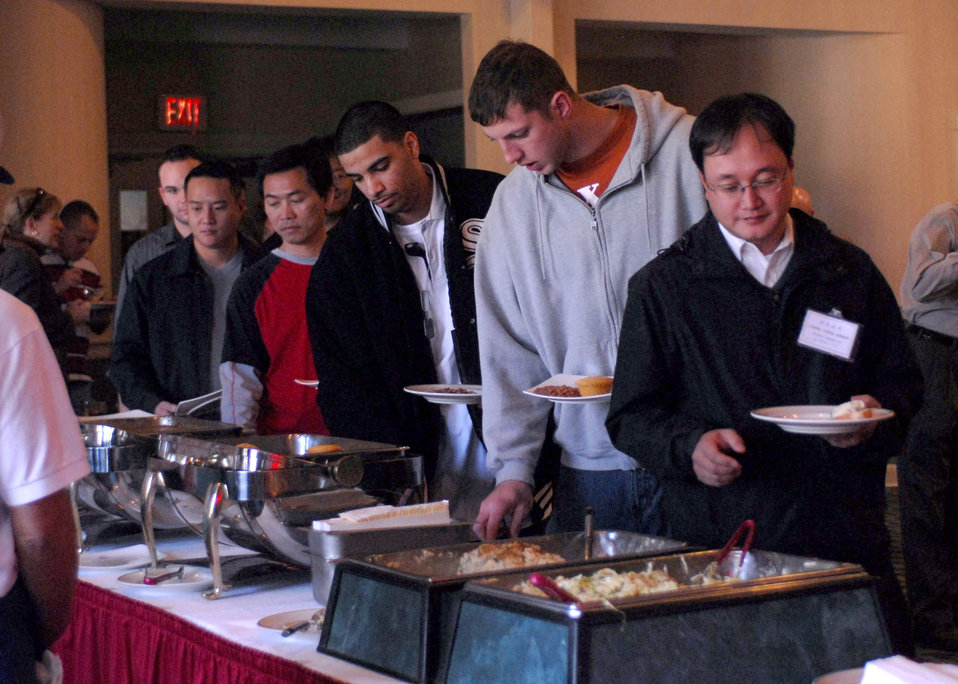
Honorary commanders program in full swing at Kunsan

Airmen from the 8th Fighter Wing enjoy a buffet provided by honorary commanders from Gunsan City, South Korea here Nov. 12. More than 60 honorary commanders held a friendship day for approximately 400 Wolf Pack Airmen to increase relationships between the base and local community.